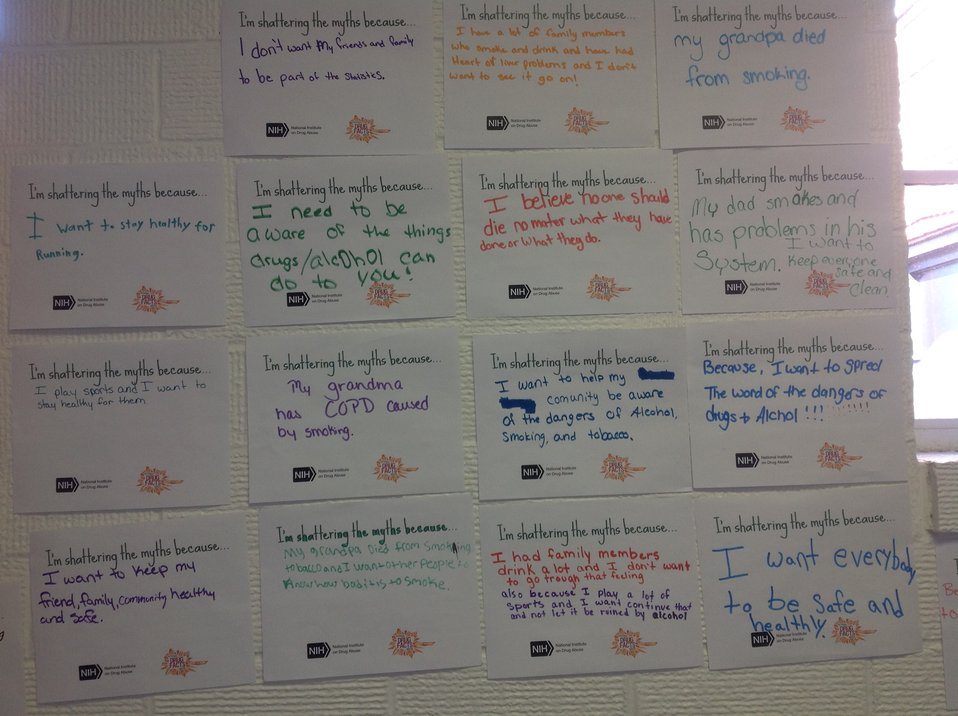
I'm Shattering the Myths Because...

Teenagers from the Van Buren County SAFE Coalition's, Youth Leadership Council (YLC) in Keosauqua, Iowa participate in various events during National Drug Facts Week, 2014.